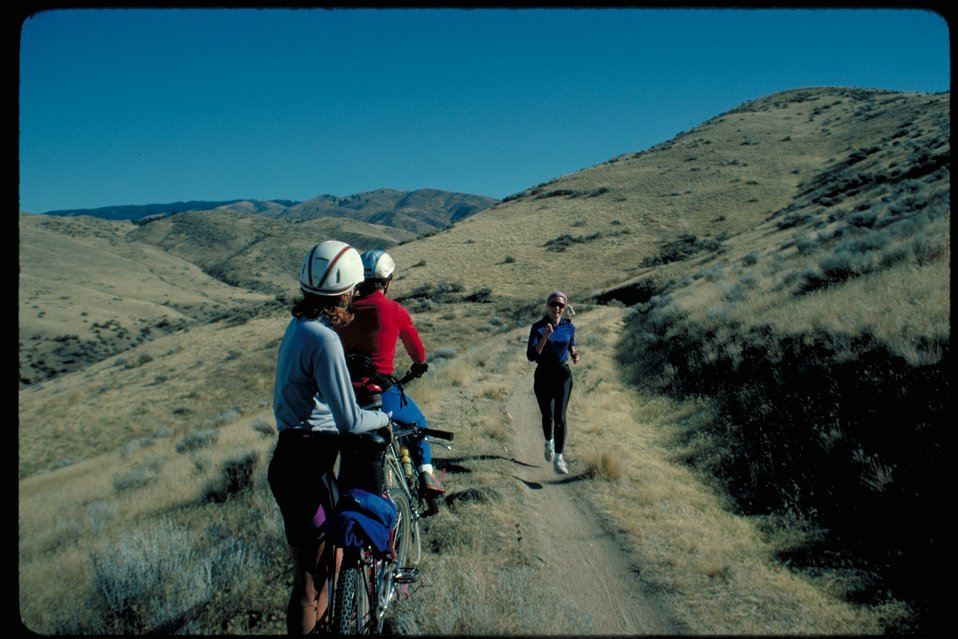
Bikers and joggers on Boise Front trail Four Rivers Field Office LSRD Lower Snake River District